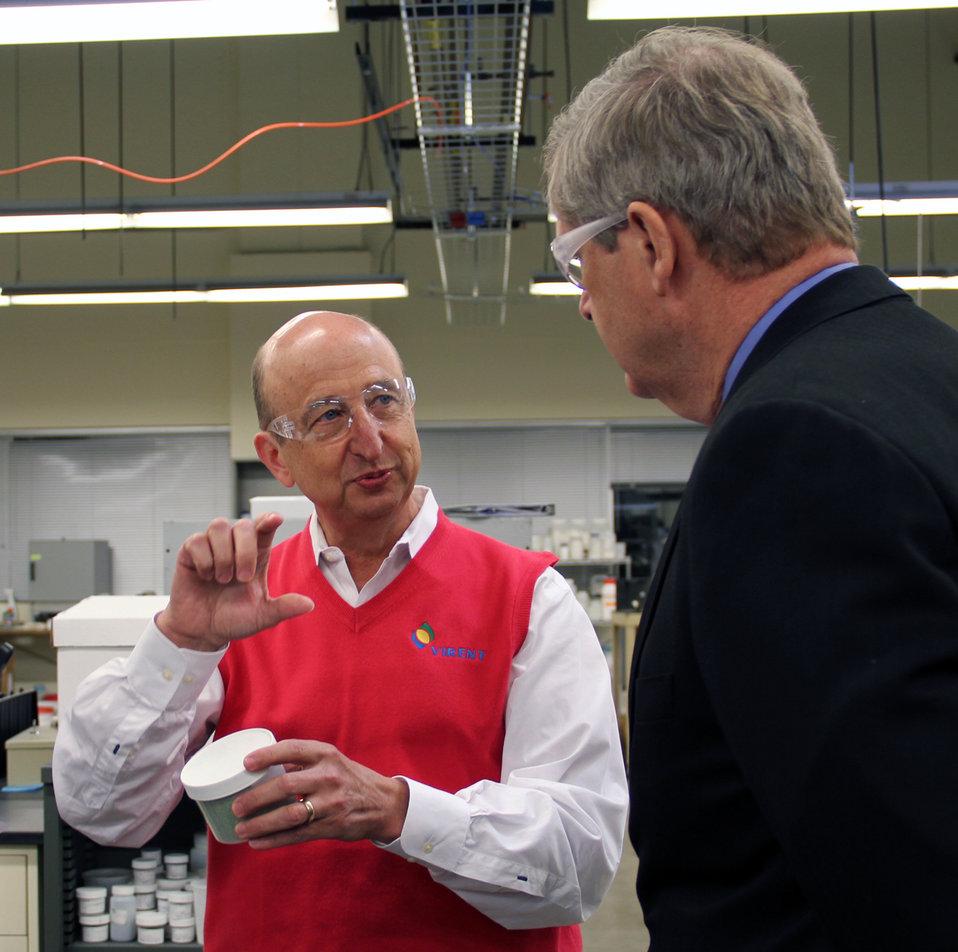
Agriculture Secretary Tom Vilsack (right) speaks with Founder and Chief Technology Officer at the Virent Energy Systems Randy Cortwright in Madison, WI, on Wednesday, April 18, 2012. This company produces beverage bottles made entirely from plant-based materials. It is an example of how manufacturing products from biobased materials is creating jobs across the country and is reducing America’s reliance on foreign oil.